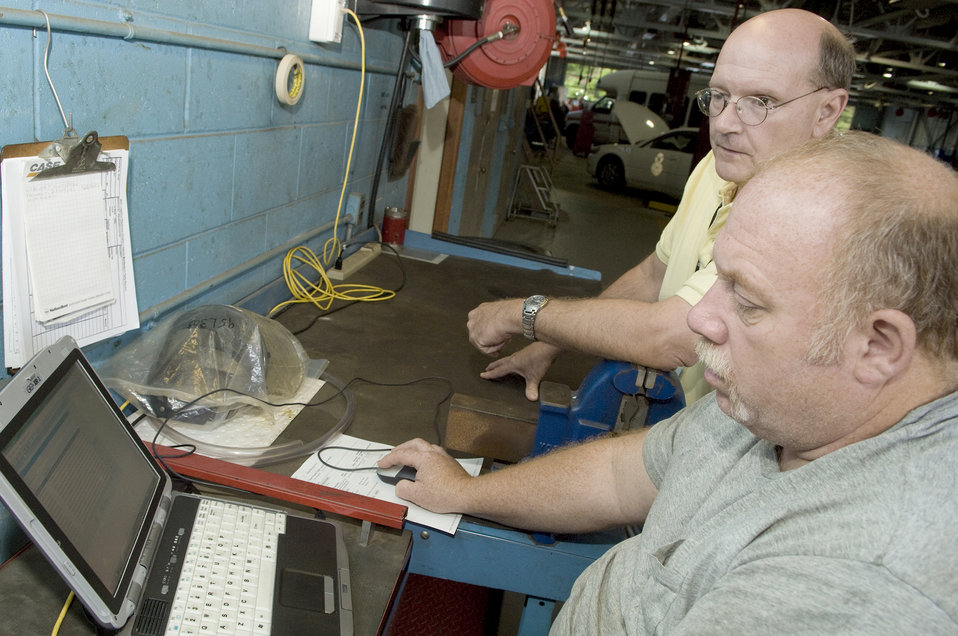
Logistics system release

Rick Lord opens the first Expeditionary Combat Support System work order as Fritz Cooper looks on Aug. 2, 2010, at Hanscom Air Force Base, Mass. Hanscom AFB is the pilot base for implementing ECSS, which will ultimately be used by more than 40,000 people at approximately 180 installations. Mr. Lord is a fire apparatus maintainer in the 66th Logistics Squadron. Mr. Cooper works for Computer Sciences Corporation.